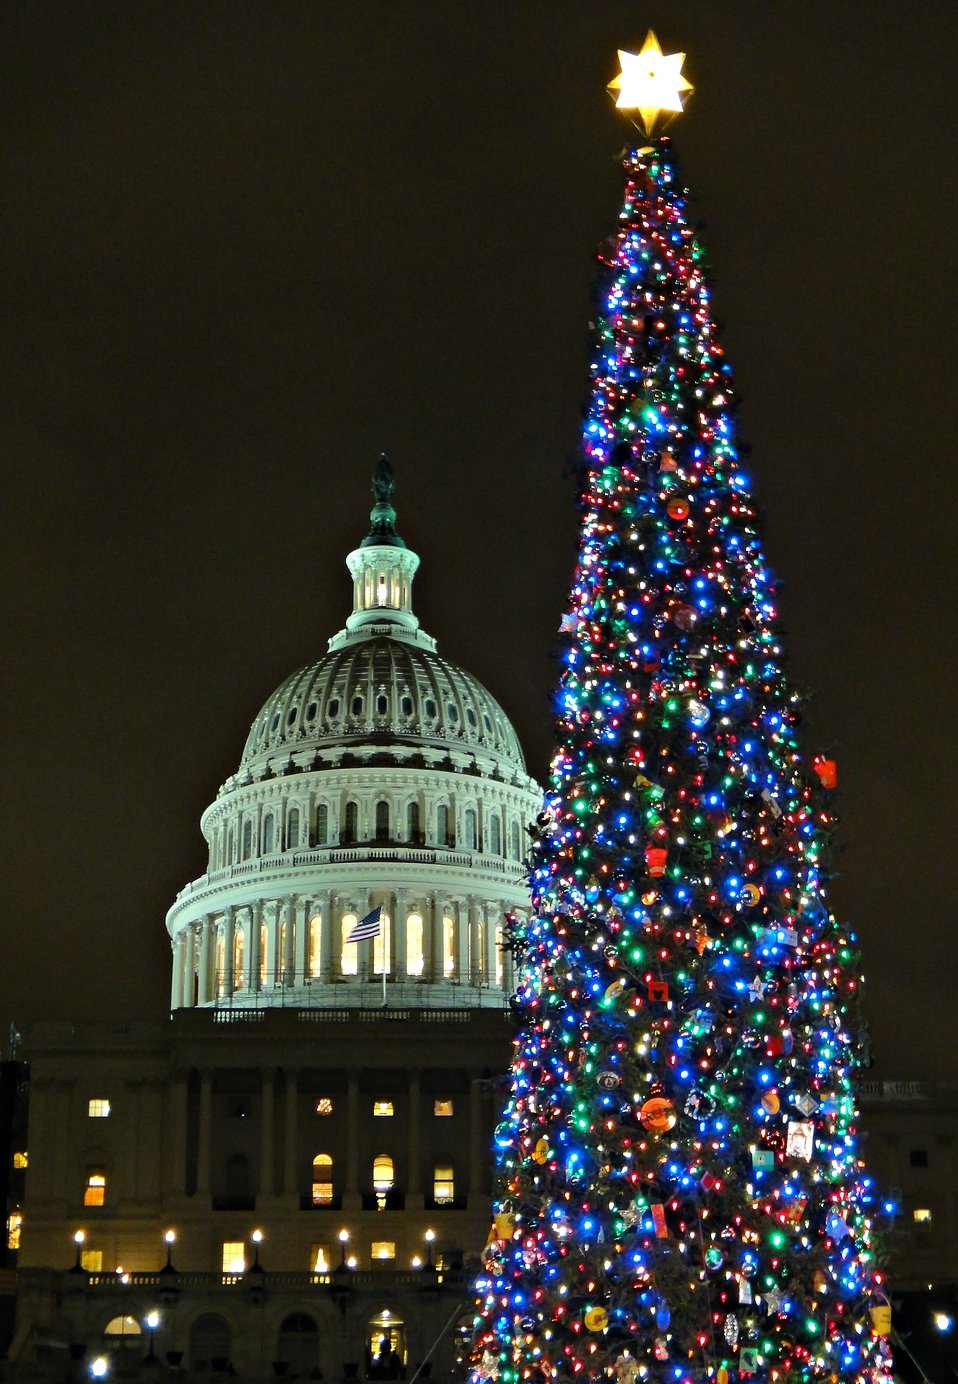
DSC01457 for blog

A 63-foot Sierra white fir from the Stanislaus National Forest in California was lit as the 2011 Capitol Christmas Tree during a ceremony Dec. 6 on the west front lawn of the Capitol. The Christmas tree is adorned with about 3,000 ornaments, all homemade by California residents, and 10,000 energy-efficient lights.